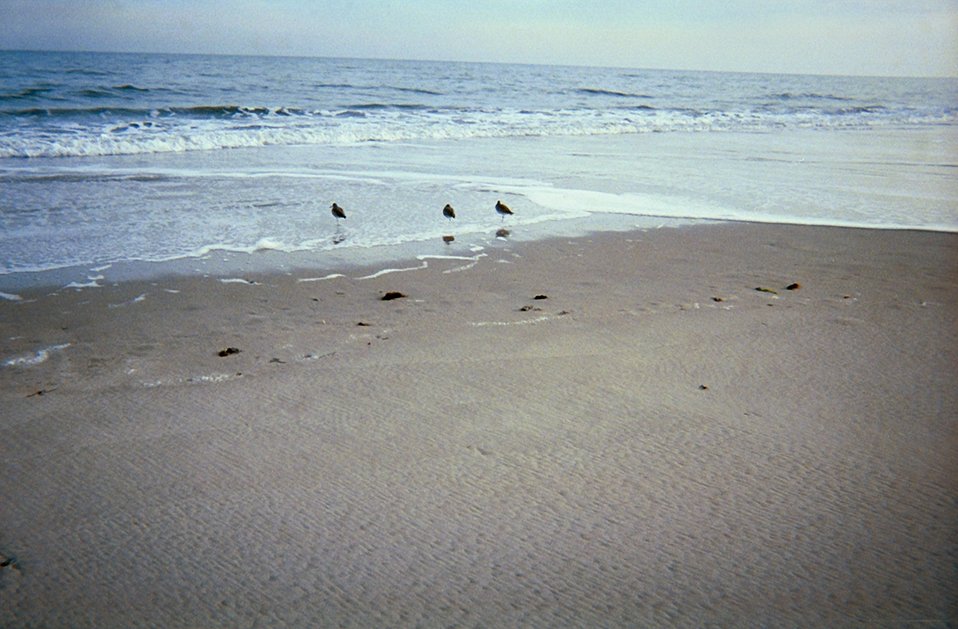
Shore birds looking for dinner in the swash from the surf.